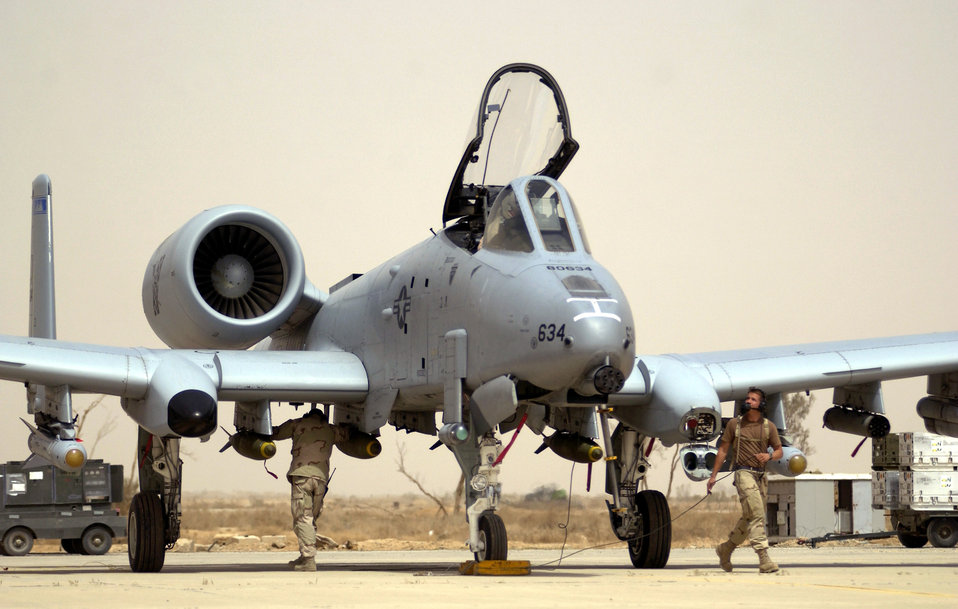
Thunderbolt II ready for take off

OPERATION IRAQI FREEDOM -- Crew chiefs from the 392nd Air Expeditionary Wing conduct pre-flight checks on their A-10 Thunderbolt II March 31, prior to taking off on a mission at a forward deployed location in southern Iraq.